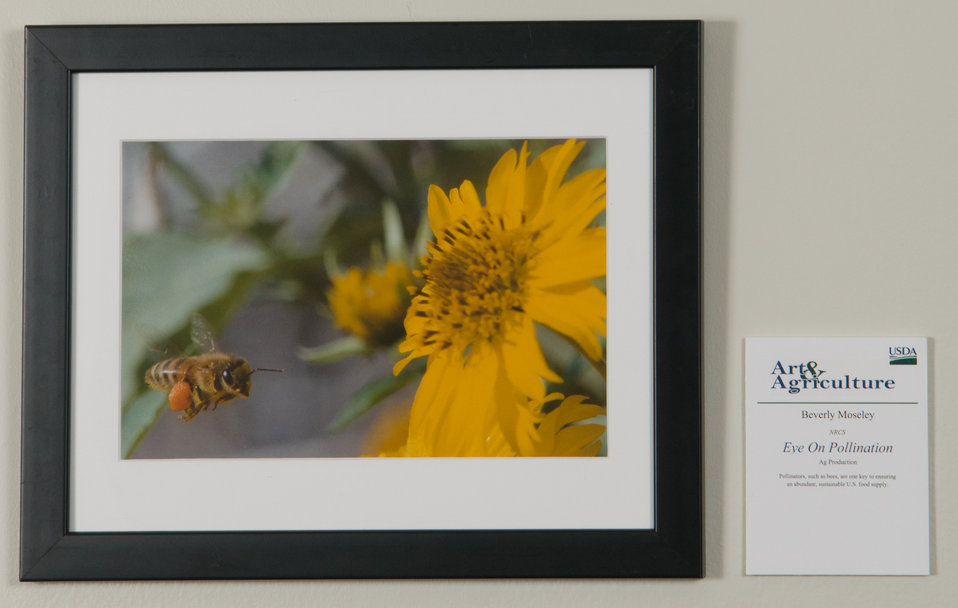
Online Viewer's Choice entries of the 2013 Art & Agriculture, Tuesday, July 9, 2013, in the South Building, Washington, D.C. Themes were expressed by employees from across the department and the contest was open to full-time and part-time USDA employees. Winning artwork will be displayed till the end of the year. U.S. Artistic expression is a creative outlet that is vital for an individual to grow and develop.